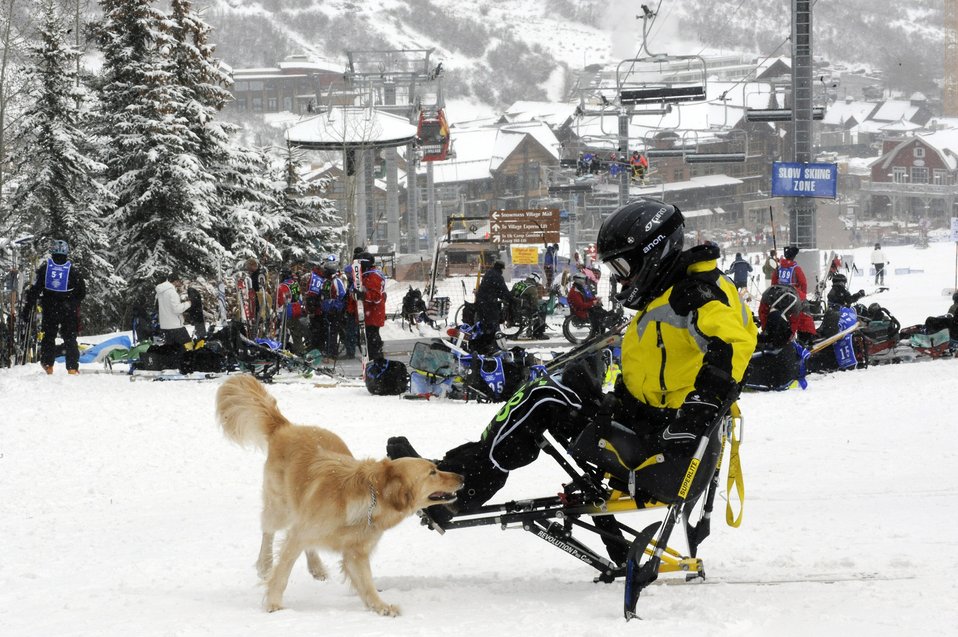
Luke Airmen assist disabled veterans at ski clinic

Russell Wolfe waits his turn to mono-ski with the help of an instructor while his dog, Noelle, keeps him company during the 23rd National Disabled Veterans Winter Sports Clinic held March 30 at the Snowmass Village, Colo. Mr. Wolfe is prior Army and is from Widnoon, Penn.